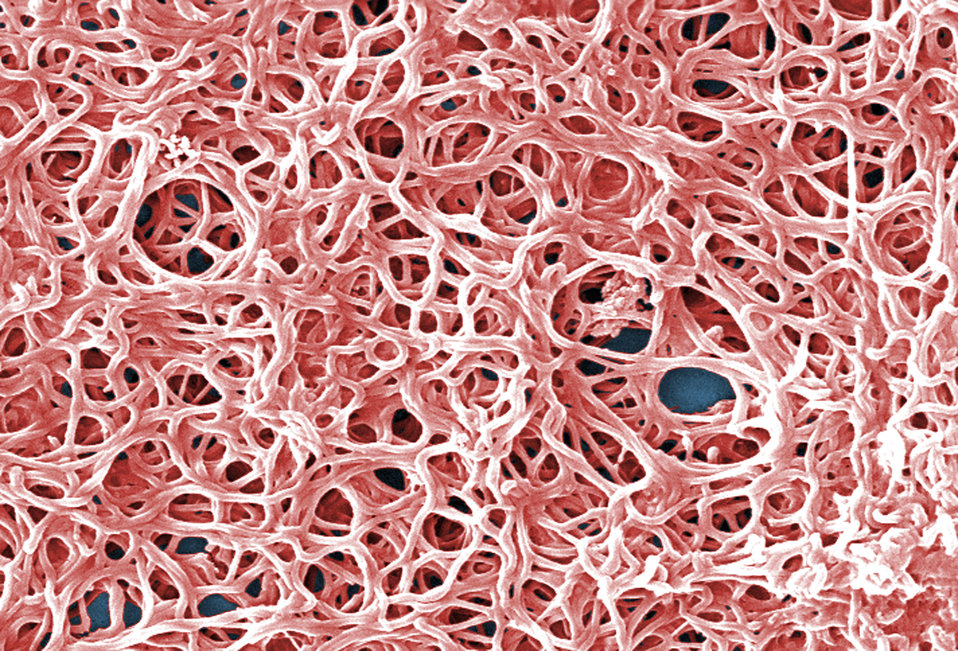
An enlarged view of PHIL 13166, this digitally-colorized scanning electron micrograph depicts a grouping of numerous Gram-negative, anaerobic, Borrelia burgdorferi bacteria, which had been derived from a pure culture.